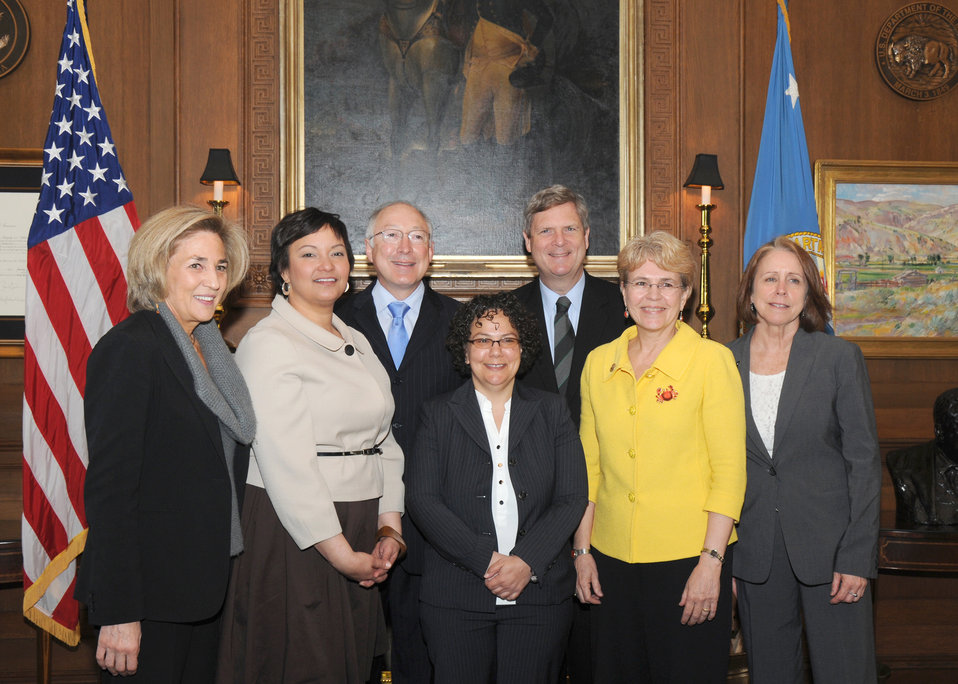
Members of President Barack Obama's cabinet were present for the signing of the Memorandum of Understanding (MOU) of the interagency agreement at the White House Conference on America's Great Outdoors held at the Department of Interior in Washington D. C. on Friday, April 16, 2010. (L to R) Deputy Under Secretary of Defense for Installations and Environment Dorothy Robyn, Environmental Protection Agency Lisa Jackson, Interior Secretary Ken Salazar, Council on Environmental Quality Chair Nancy Sutley, Agriculture Secretary Tom Vilsack, National Oceanic and Atmospheric Administrator Dr. Jane Lubchenco, and Assistant Secretary of the Army for Civil Works Jo-Ellen Darcy. USDA photo 10di1317-01